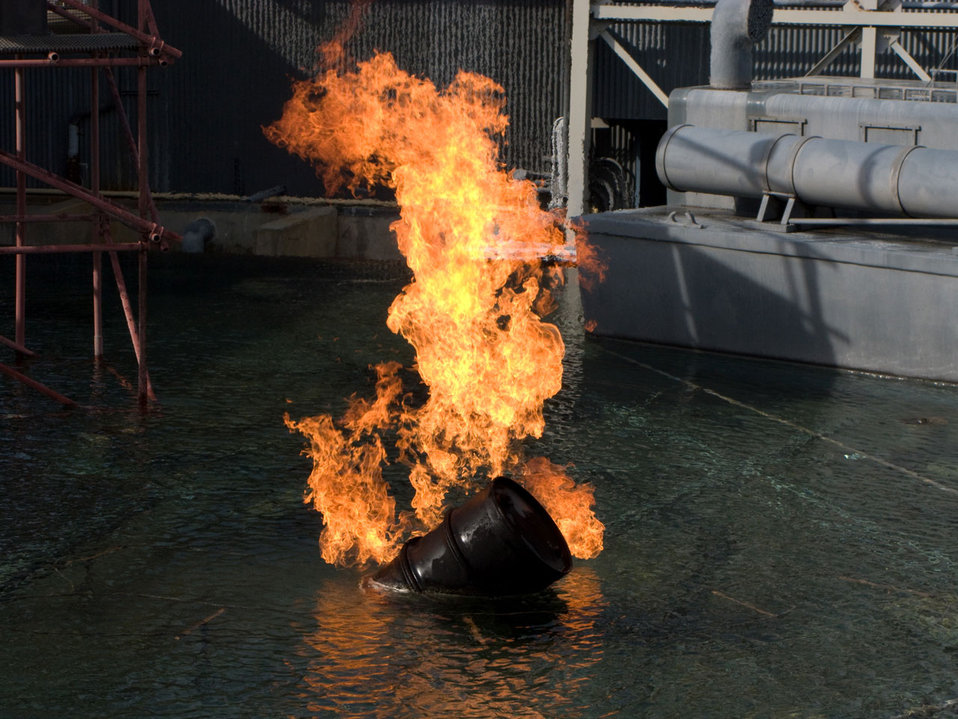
Burning barrel

Orange flames rising from a barrel in the water.